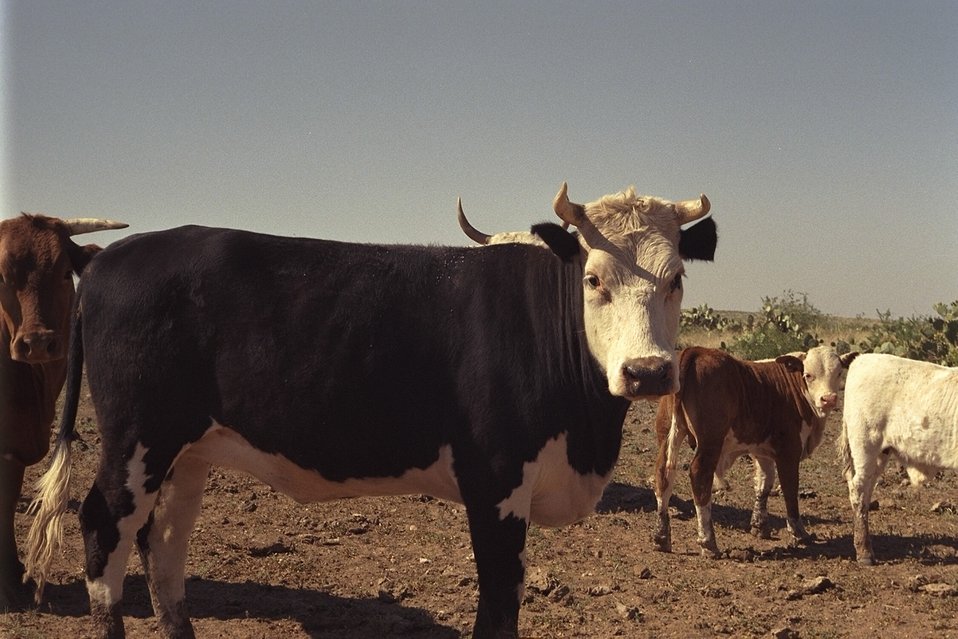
Moo!! Cattle on the Agua Fria National Monument.